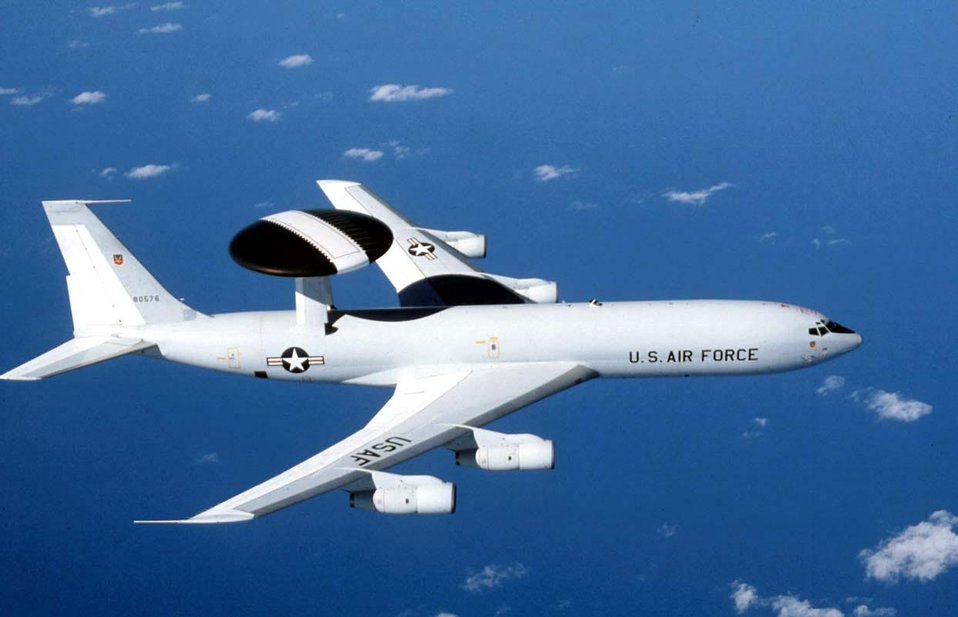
Sentry

FILE PHOTO -- The E-3 Sentry is an airborne warning and control system aircraft that provides all-weather surveillance, command, control and communications needed by commanders of U.S. and NATO air defense forces. As proven in Desert Storm, it is the premier air battle command and control aircraft in the world today. The E-3 Sentry is a modified Boeing 707/320 commercial airframe with a rotating radar dome. The dome is 30 feet in diameter, six feet thick, and is held 11 feet above the fuselage by two struts. It contains a radar subsystem that permits surveillance fromthe Earth's surface up into the stratosphere, over land or water. The radar has a range of more than 200 miles for low-flying targets and farther for aerospace vehicles flying at medium to high altitudes. The radar combined with an identification friend or foe subsystem can look down to detect, identify and track enemy and friendly low-flying aircraft by eliminating ground clutter returns that confuse other radar systems.